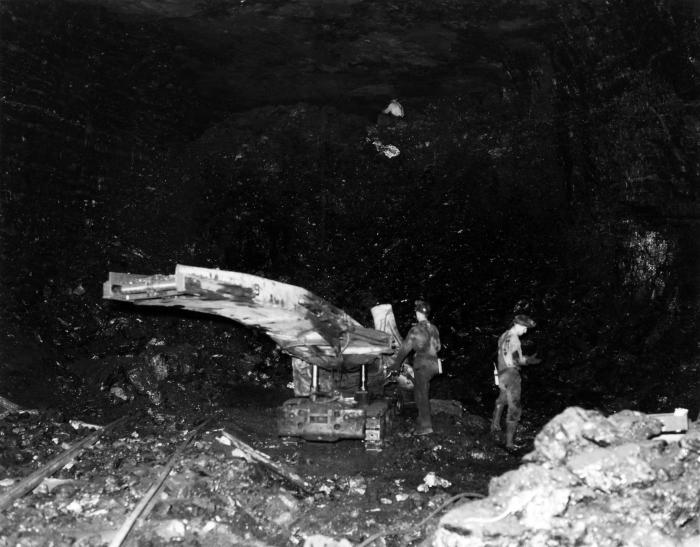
This historic image, from the 1950s to 1960s, depicted two miners in the subterranean confines of a submanrine St. Jonn, Canadian iron ore mine using a 'mechanized loader'. This device would excavate ore from the mine walls, and run the raw material up a conveyor belt, dumping it from the end into a coal bin rail car. In this fashion, the ore would be transported up, and out of the mine to the surface. Note that neither miner wore any protective filtered breathing devices, or any protective eyewear. Due to the inescapable presence of airborne coal dust in the small confines of a mine, miners are predisposed to the long-term negative health effects of this profession such as 'black lung disease', or 'coal-workers' pneumoconiosis' (CWP). Today, the Federal government's stringent regulations on the level of coal dust permissible in the air of a coal mine, and the requisite use of filtered breathing devices, has dramatically lowered the number of cases of black lung disease.